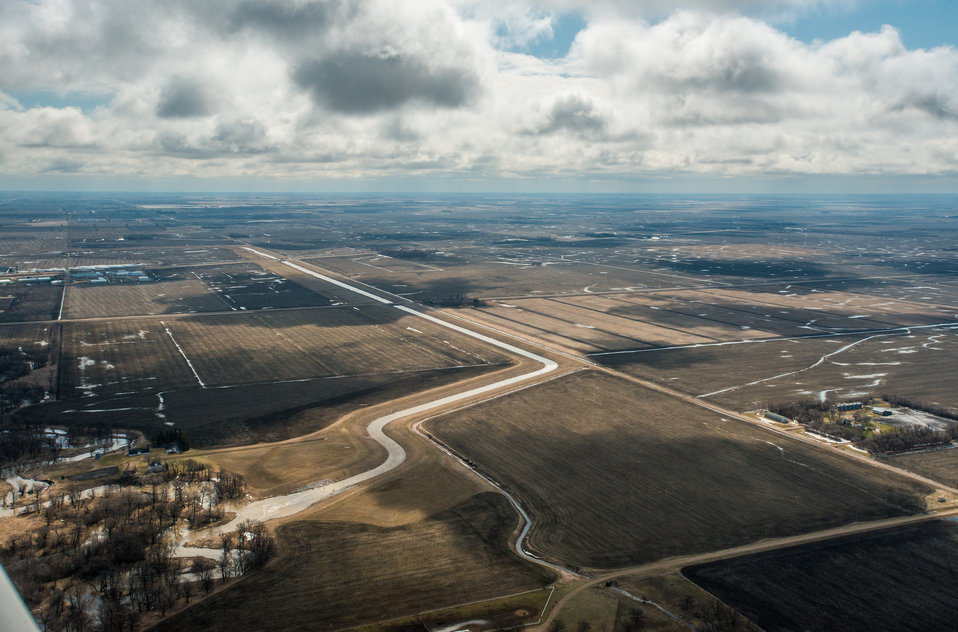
Snake River Diversion, a Public Law PL83-566 Small Watershed Program, at Warren, MN, on Wednesday, May 1, 2013. For information about this and other programs from the USDA Red River Basin Initiative (RRBI) please see www.mn.nrcs.usda.gov/news/features13/RRBI.html.